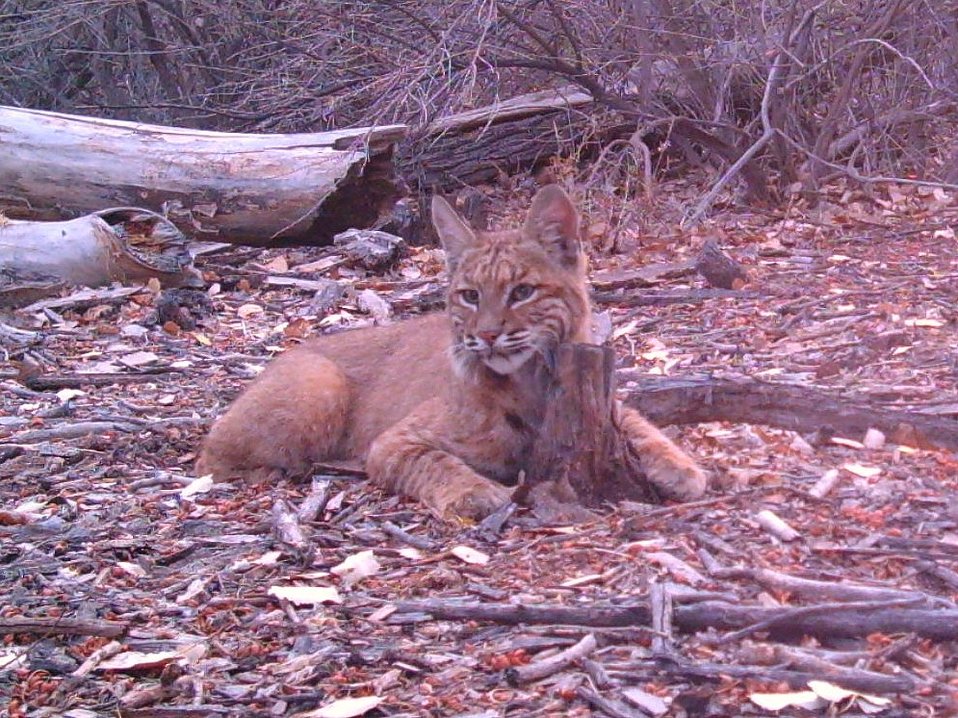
bobcat rubbing scent post

Bosque del Apache National Wildlife Refuge, NM
Camera trap project by Matt Farley, Jennifer Miyashiro, and J.N. Stuart.